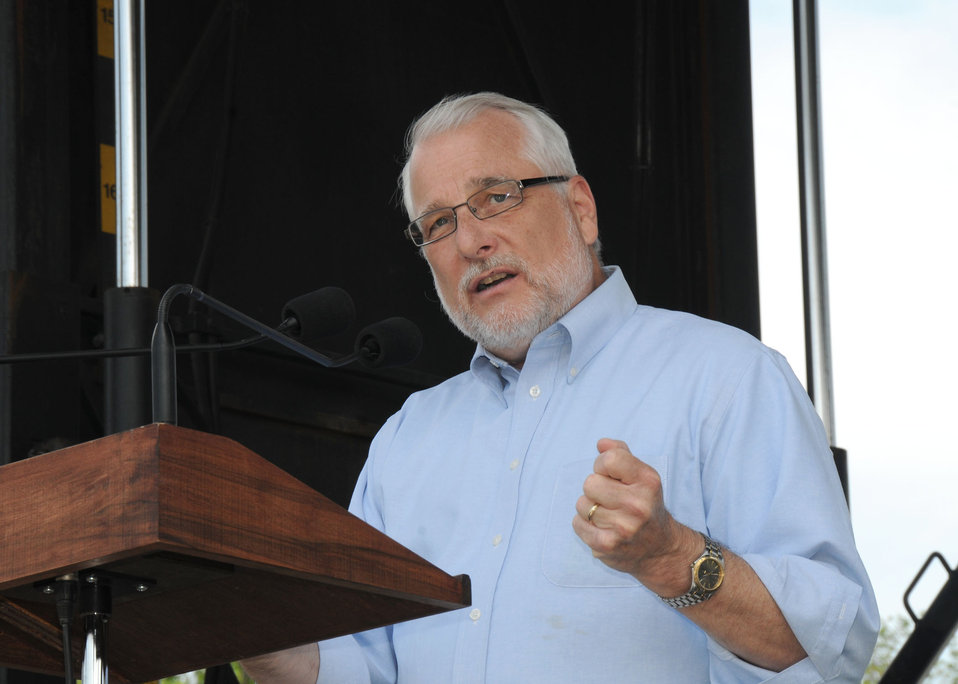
Natural Resources and Conservation Services (NRCS) Chief Dave White speaks at the opening day ceremonies for Earth Day held on the Mall in Washington, D. C., on April 22, 2010. Chief White spoke about the conservation projects being done by the Department of Agriculture. USDA photo 10di1326-61